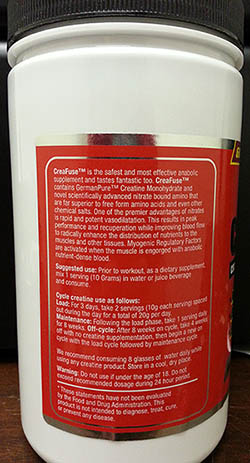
RECALLED – Dietary Supplement

September 12, 2013 – Product Recall – GE Pharma, LLC Announces a Recall of Dietary Supplement Creafuse Powder Due to Possible Health Risk.